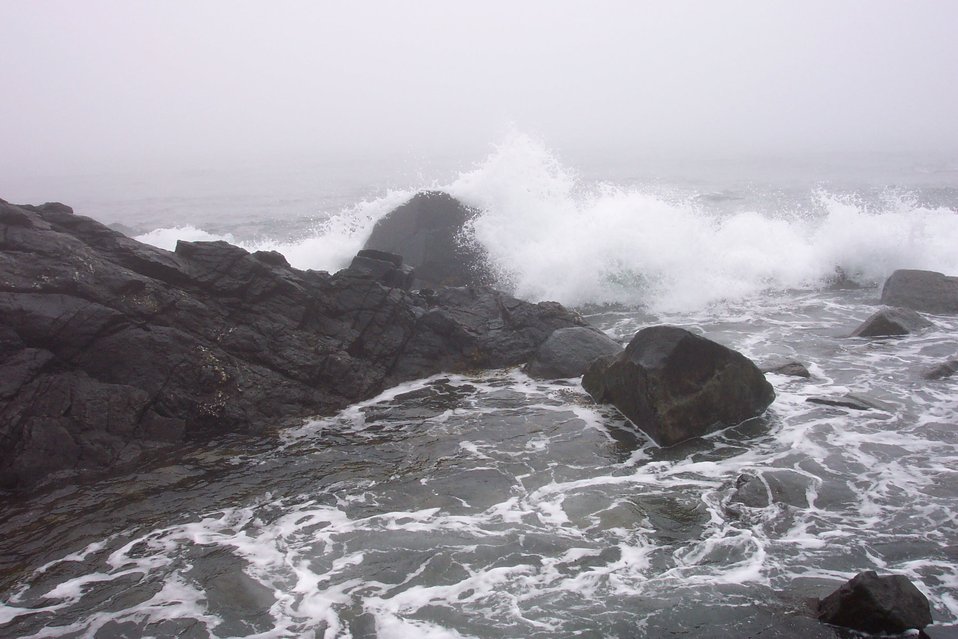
Ocean and rock doing battle below West Quoddy Head. The rock is doomed to lose.